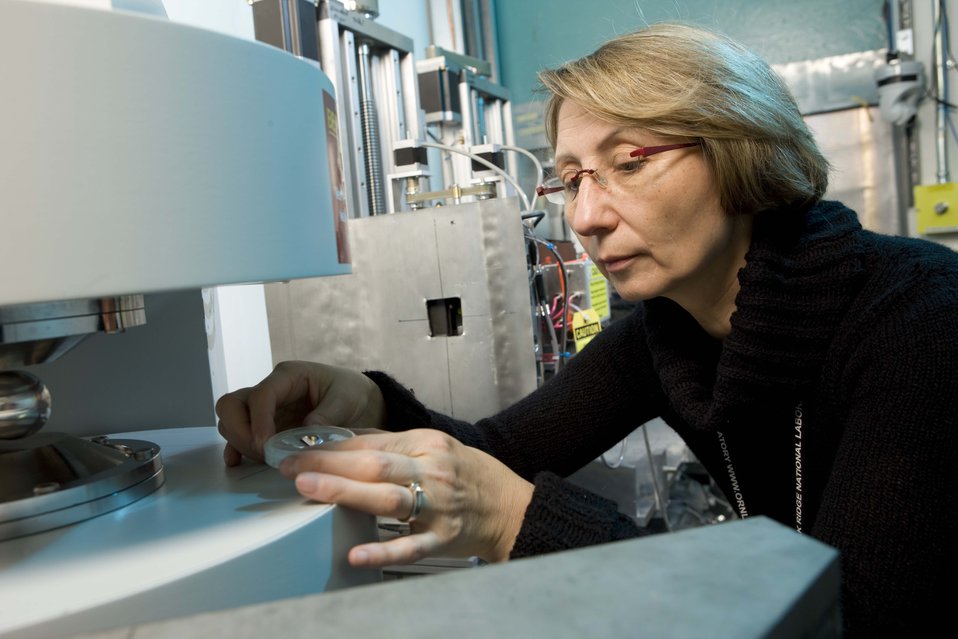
Researcher in Oak Ridge